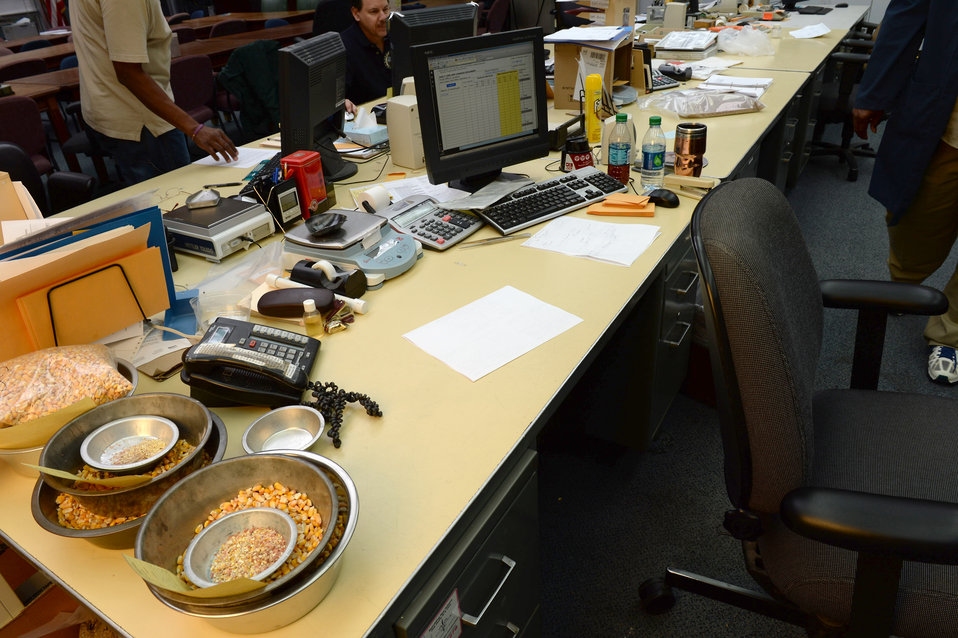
A U.S. Department of Agriculture (USDA) Grain Inspection, Packers and Stockyards Administration (GIPSA) Federal Grain Inspection Service (FGIS) scientist tests corn at the FGIS inspection laboratory in New Orleans, LA on Monday, Nov. 18, 2013.